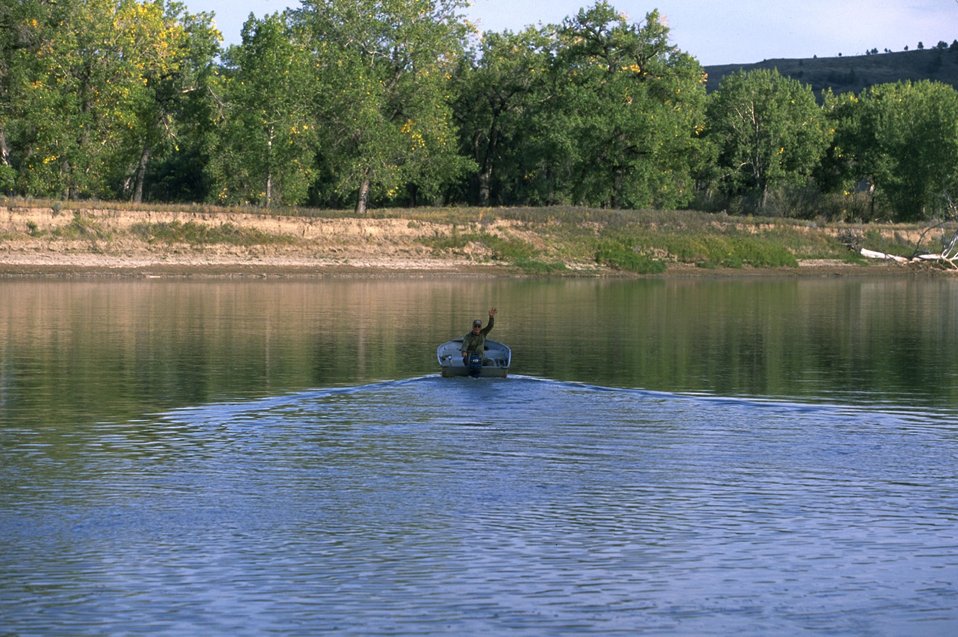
Motorboat at Kipp Recreation Area